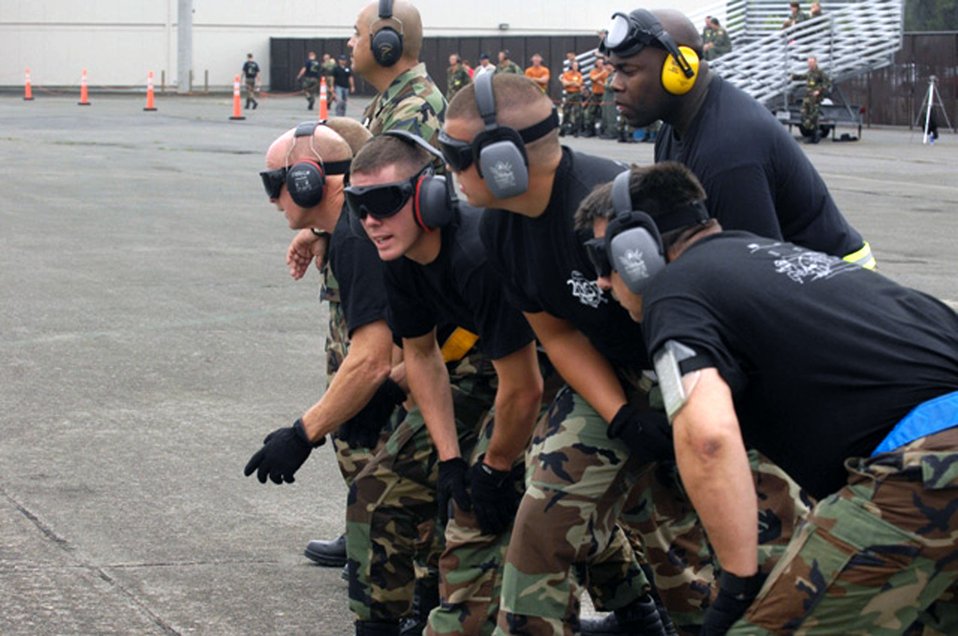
Transportation Airmen compete in Rodeo 2007

Airmen from the Air Force Reserve Command's 315th Airlft Wing at Charleston Air Force Base, S.C., prepare to load a C-17 Globemaster III during the aerial ports engine running on loads competition at Air Mobility Command's Rodeo 2007 July 20 at McChord Air Force Base, Wash. Rodeo 2007 is a readiness competition of U.S. and international mobility air forces. It focuses on improving warfighting capabilities in support of the war on terrorism.